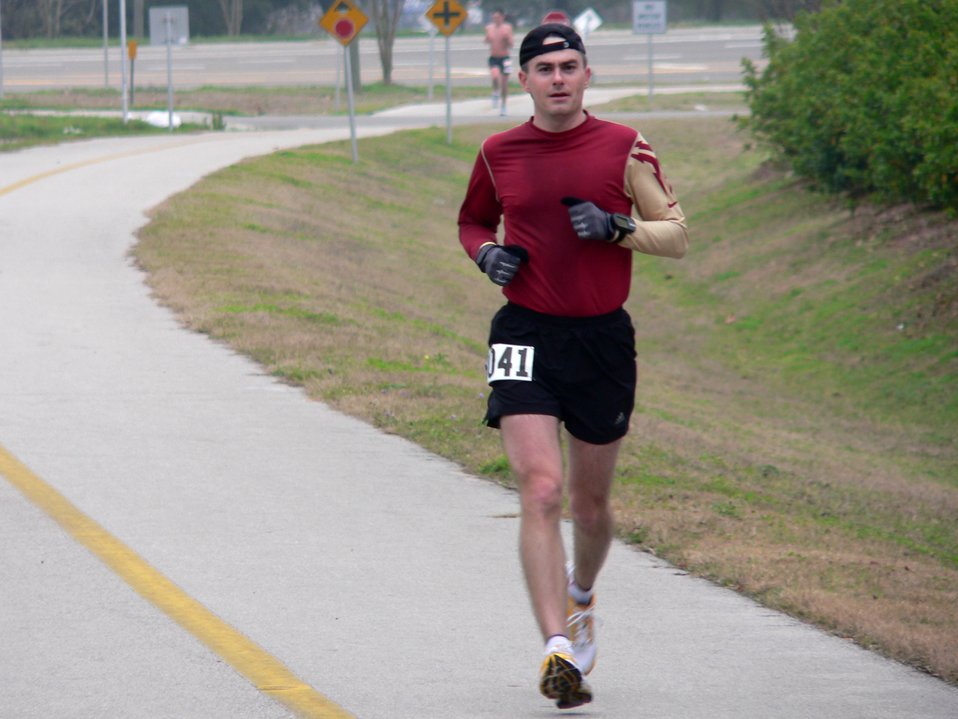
Weather officer to compete in Antarctic marathon

Maj. Michael Mills runs in the Tallahassee Marathon in February 2006. Major Mills is assigned to the Headquarters Air Force Weather Plans and Requirement Division and is training for the Antarctica Marathon.